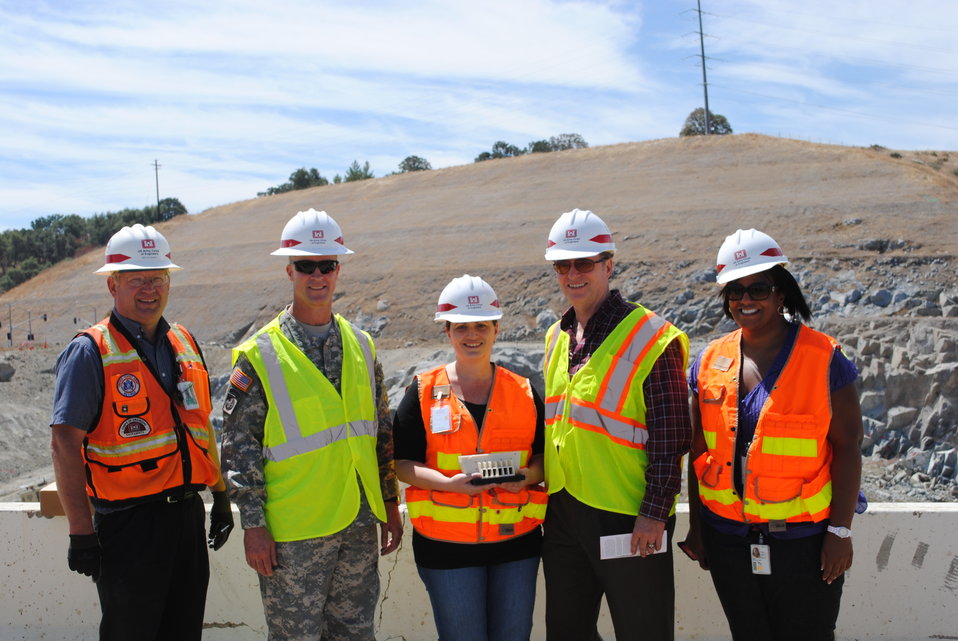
Congressman Dan Lungren with Col. Mike Wehr and Folsom Dam Joint Federal Project team members

Congressman Dan Lungren (second from right) along with (from left) U.S. Army Corps of Engineers Sacramento District's Folsom Dam Joint Federal Project team members Jon Revolinsky, Col. Mike Wehr, Beth Salyers and Pamela Amie, Aug. 12, 2011.